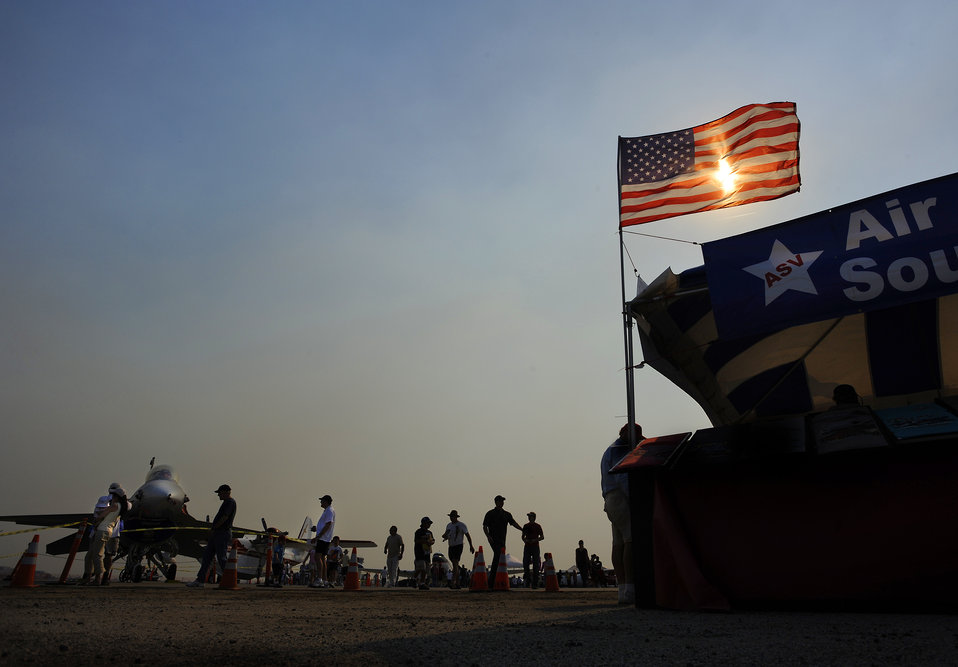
Aerospace exhibition entertains, informs during Air Force Week Los Angeles

Spectators check out aircraft static displays at the Wings Over Long Beach Air Expo in Long Beach on Nov. 15 during Air Force Week Los Angeles. Air Force Week Los Angeles is an event designed to educate the local population about the Air Force's capabilities and missions through various activities and exhibitions all over the Los Angeles area. It provides an up close and personal look at the men and women of the Air Force serving worldwide in the defense of freedom. Air Force Week Los Angeles runs from Nov. 14 to 21.